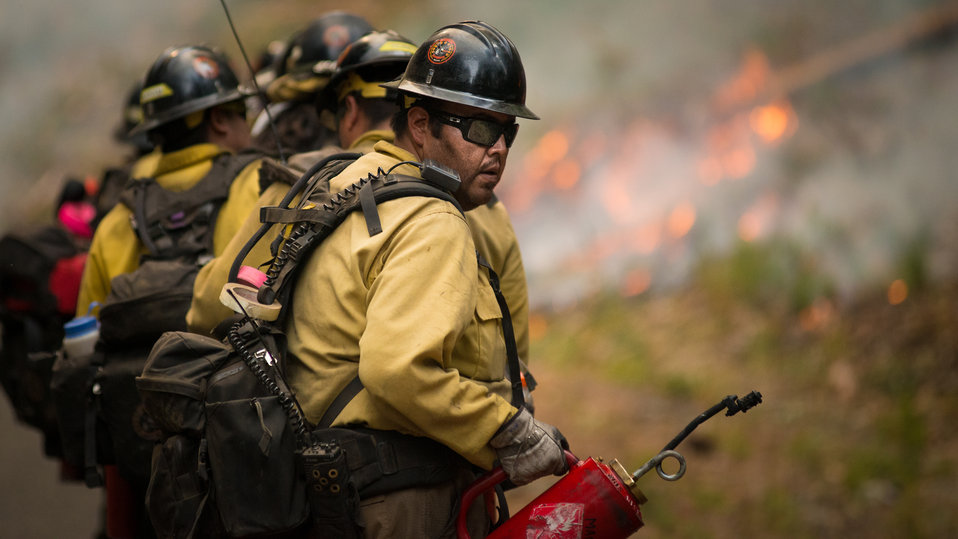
Geronimo Interagency Hotshot Crew, Department of the Interior (DOI) Indian Affairs (IA) Bureau of Indian Affairs (BIA) San Carlos Agency in Arizona; on assignment at the Big Windy Complex Wildlands Fire, approximately 15 miles west of Interstate-5 and East Northeast of Galice, Oregon, conducts a prescribed burn 'burnout' operation to help stop the main fire that may head toward this roadway, on Friday, Aug 9, 2013. The primary mission of the Interagency Hotshot Crews (IHC) is to provide a safe, organized, mobile and highly skilled hand crew for all phases of wildland fire suppression. The arduous duties and specialized assignments required of IHC personnel require uniform staffing, certification, training, equipment, communications, transportation, organization, and qualifications that adhere to interagency standards and guidelines.